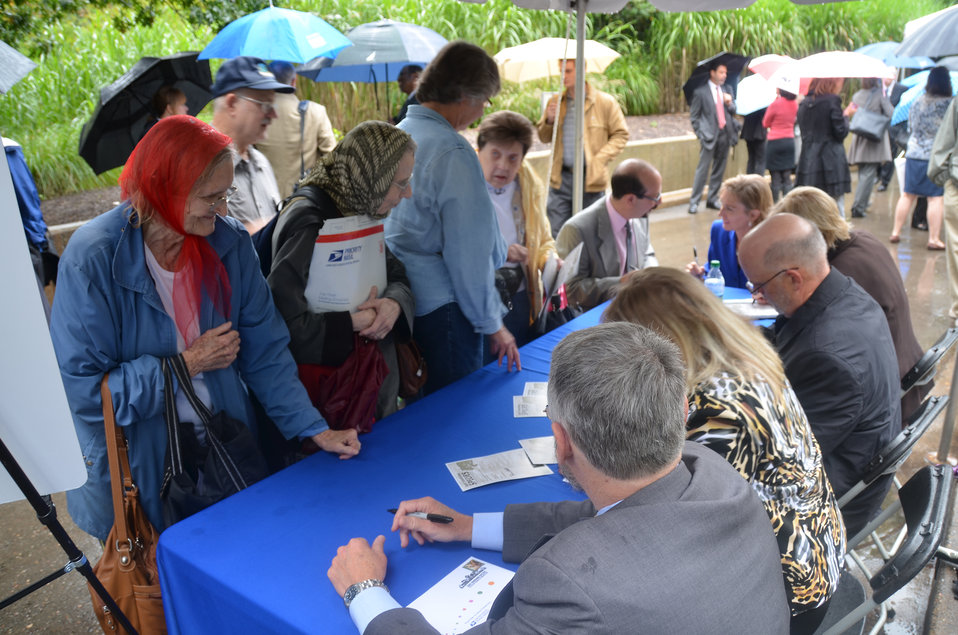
Save Vanishing Species Stamp First Day of Issue